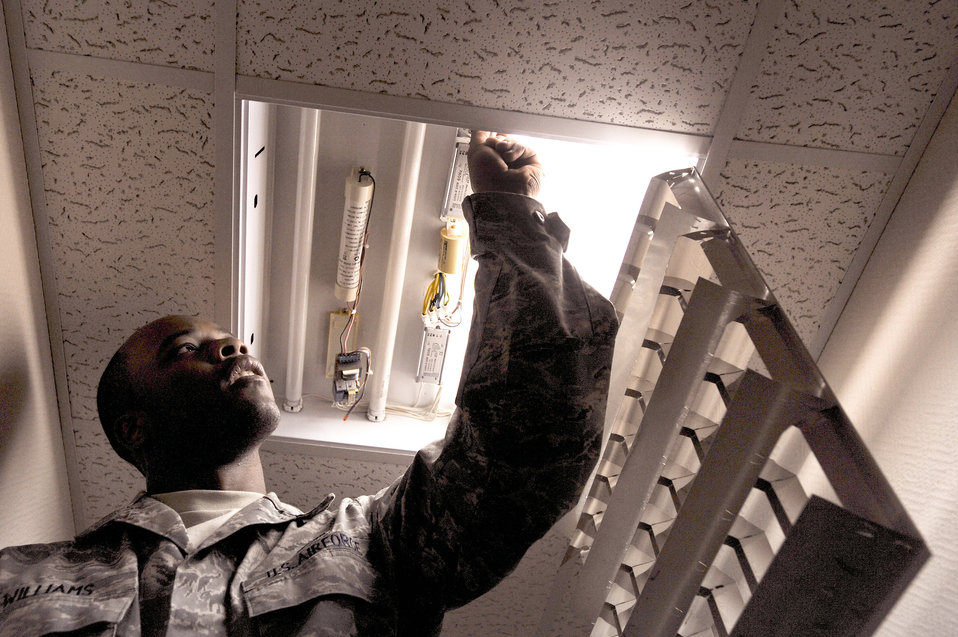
Airmen provide power to the people

Senior Airman Augustus Williams checks the starters in a light fixture Jan. 14 at an air base in Southwest Asia. Airman Williams is a 379th Expeditionary Civil Engineer Squadron electrician and deployed from Pope Air Force Base, N.C. He is a native of Augusta, Ga.